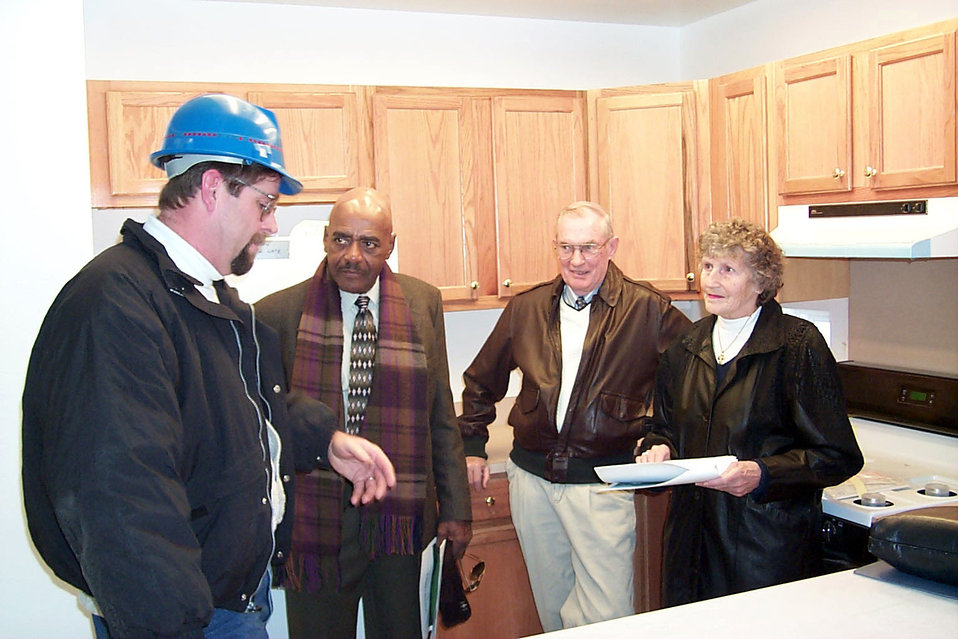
New Housing

OFFUTT AIR FORCE BASE, Neb. -- Mike Huntley (left), a project engineer with the 55th Civil Engineer Squadron, discusses improvements in new housing units here, with (from left) Thomas Barnes, James McCoy and Kathy McCoy. Barnes and James McCoy are former chief master sergeants of the Air Force.